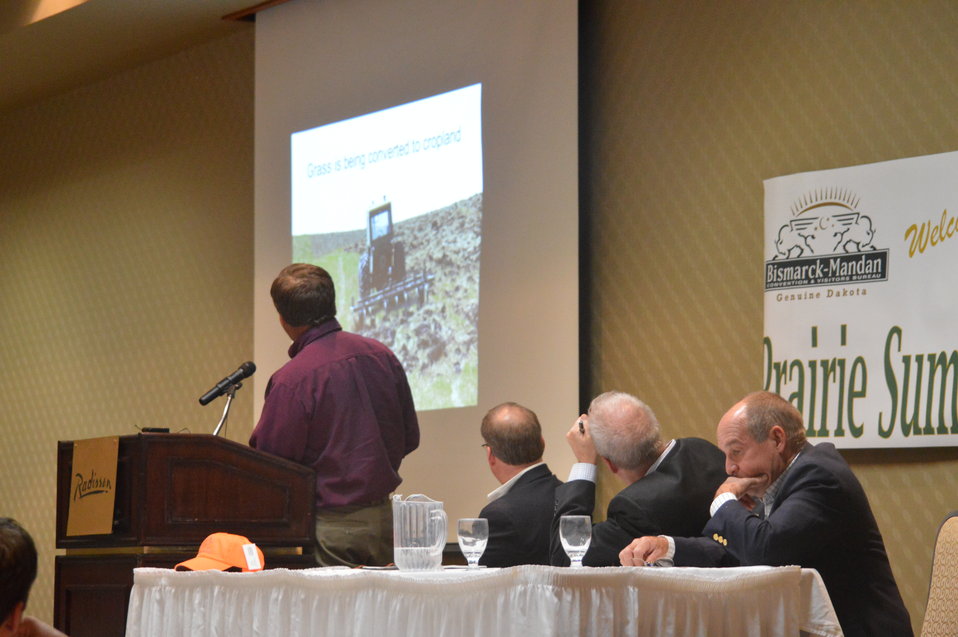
Lloyd Jones speaks at the Prairie Summit

Lloyd Jones from the U.S. Fish and Wildlife Service speaks about grassland and wetland easements at the Prairie Summit in Bismarck, North Dakota.